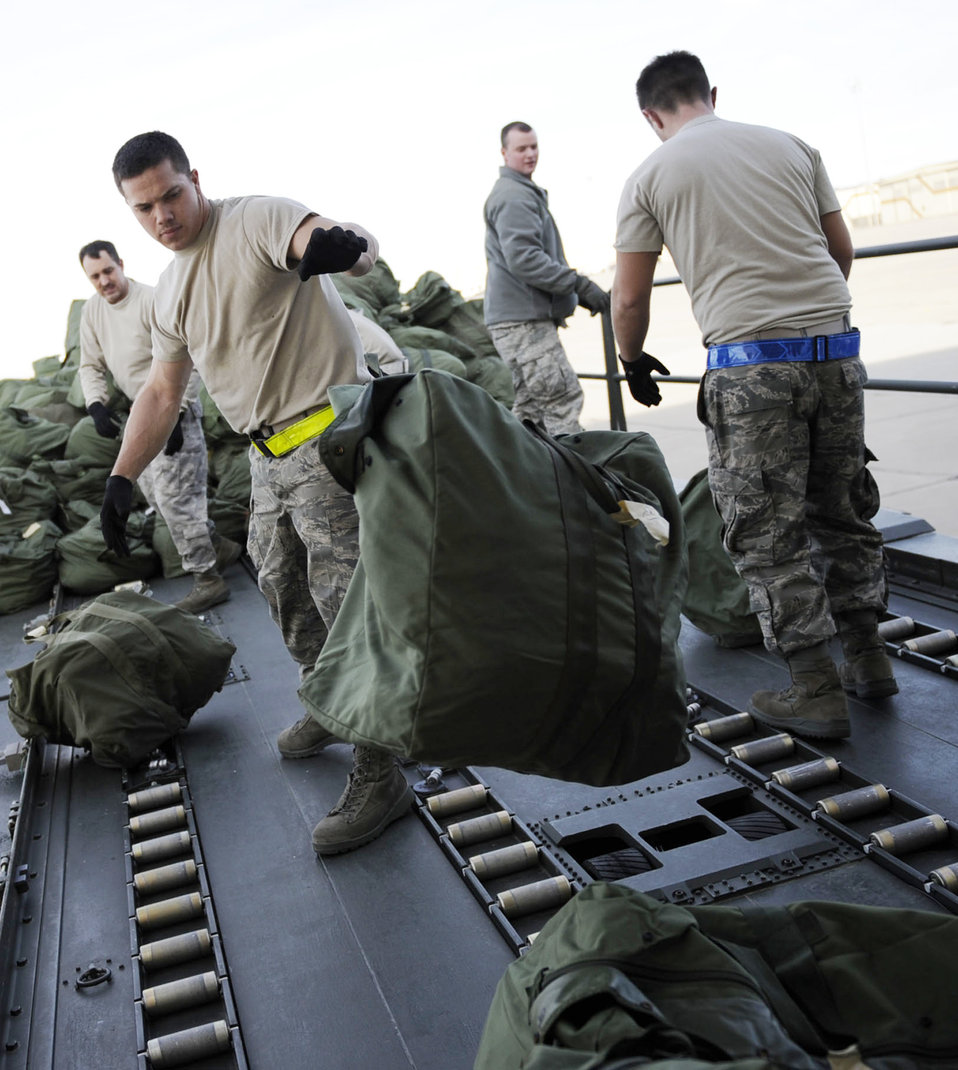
Squadron goes to South Korea

Airmen from the 726th Air Control Squadron load mobility bags at Mountain Home Air Force Base, Idaho, before the 391st Fighter Squadron deploys to South Korea, Jan. 18, 2010. The 391st FS will deploy more than 300 Airmen to continue the combat capability provided by the 389th Fighter Squadron.